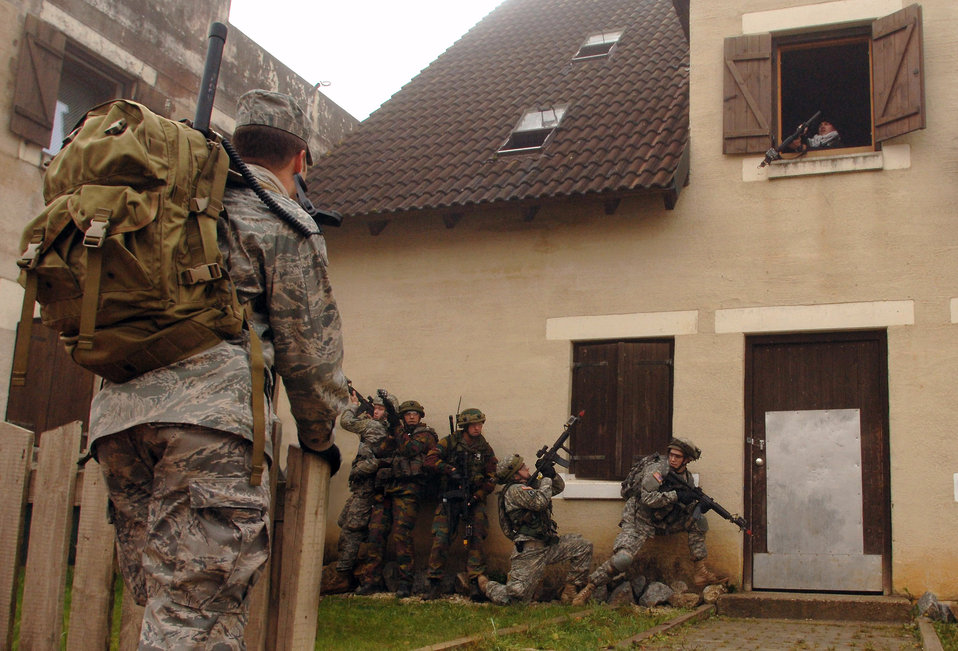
Forward air controllers prepare for war

Staff Sgt. Jason Tonkinson evaluates an urban warfare scenario involving U.S. and Belgian forces during Exercise Allied Strike II at Hohenfels Army Garrison, Germany.
The U.S. Ssoldiers with the 173rd Air Brigade Combat Team, 191 Cavalry, provided security for Belgian forward air controllers during a joint terminal air controller-centric exercise designed to prepare U.S. Air Forces Europe and NATO JTACs for Operation Iraqi Freedom and Operation Enduring Freedom. Sergeant Tonkinson is a JTAC instructor assigned to the 8th Air Support Operations Squadron at Aviano Air Base, Italy.